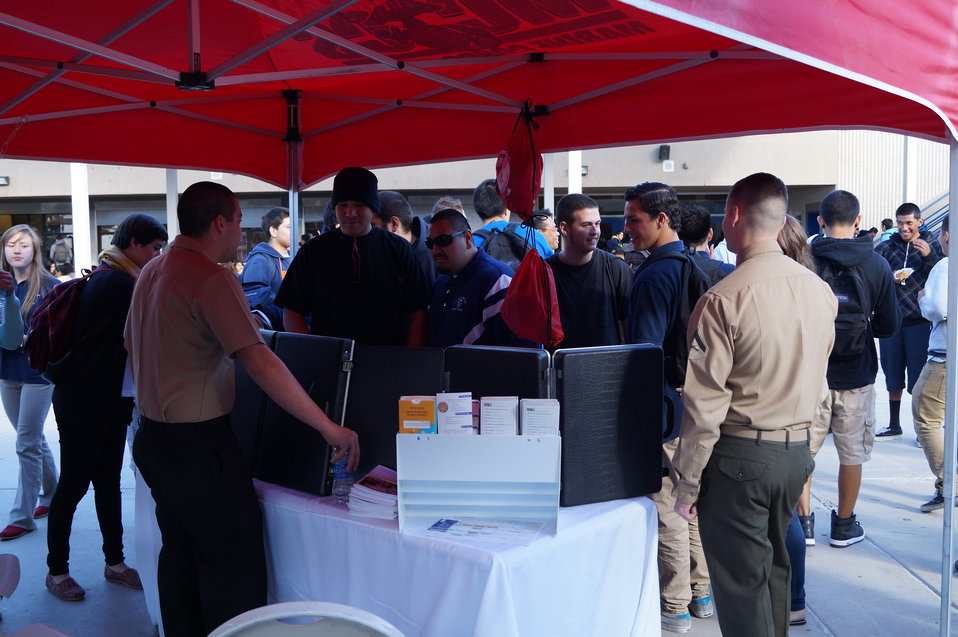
National Drug Facts Week - YUMA HIGH

The Drug Demand Reduction Program out of Yuma Arizona held numerous events at local schools to support NIDA's National Drug Facts Week, Jan. 27-Feb. 2 2014. Teens participated in drug awareness games, and helped to Shatter the Myths about teen substance abuse.